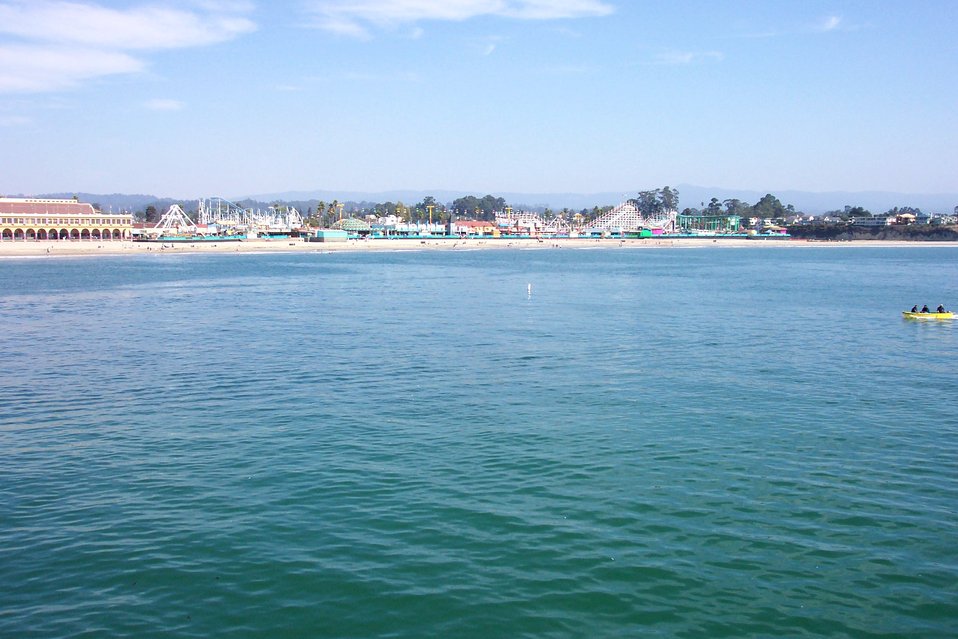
Santa Cruz Boardwalk with the high peak Loma Prieta seen in the background.